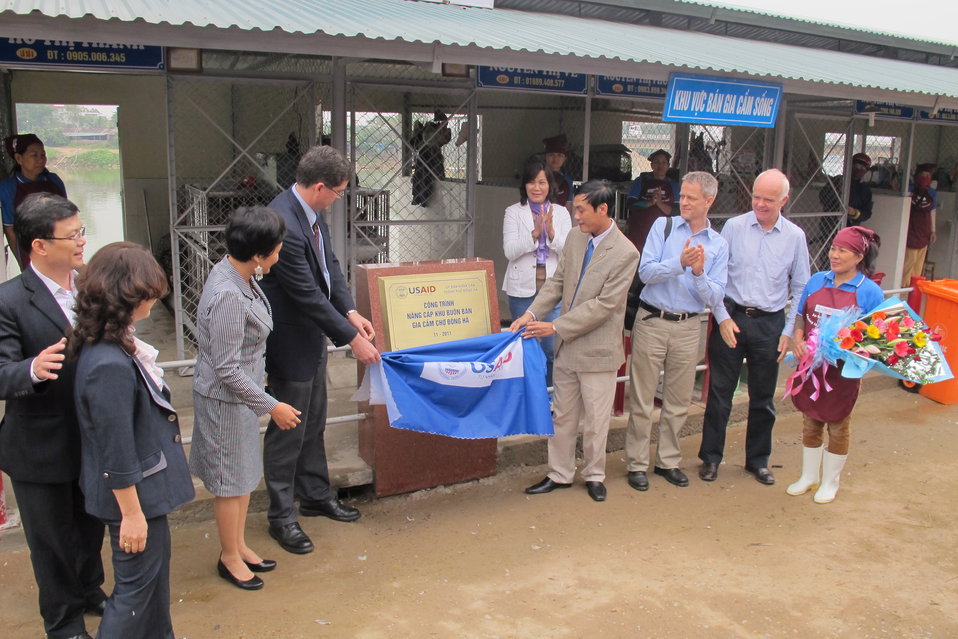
Picture Promoting Hygiene and Sanitation at Dong Ha Poultry Market